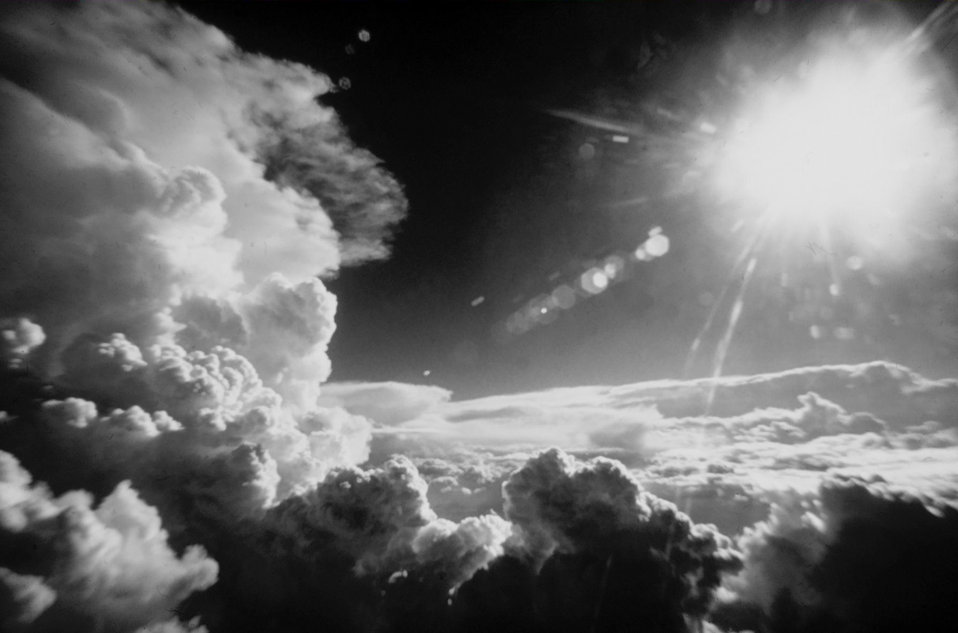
Towering cumulus